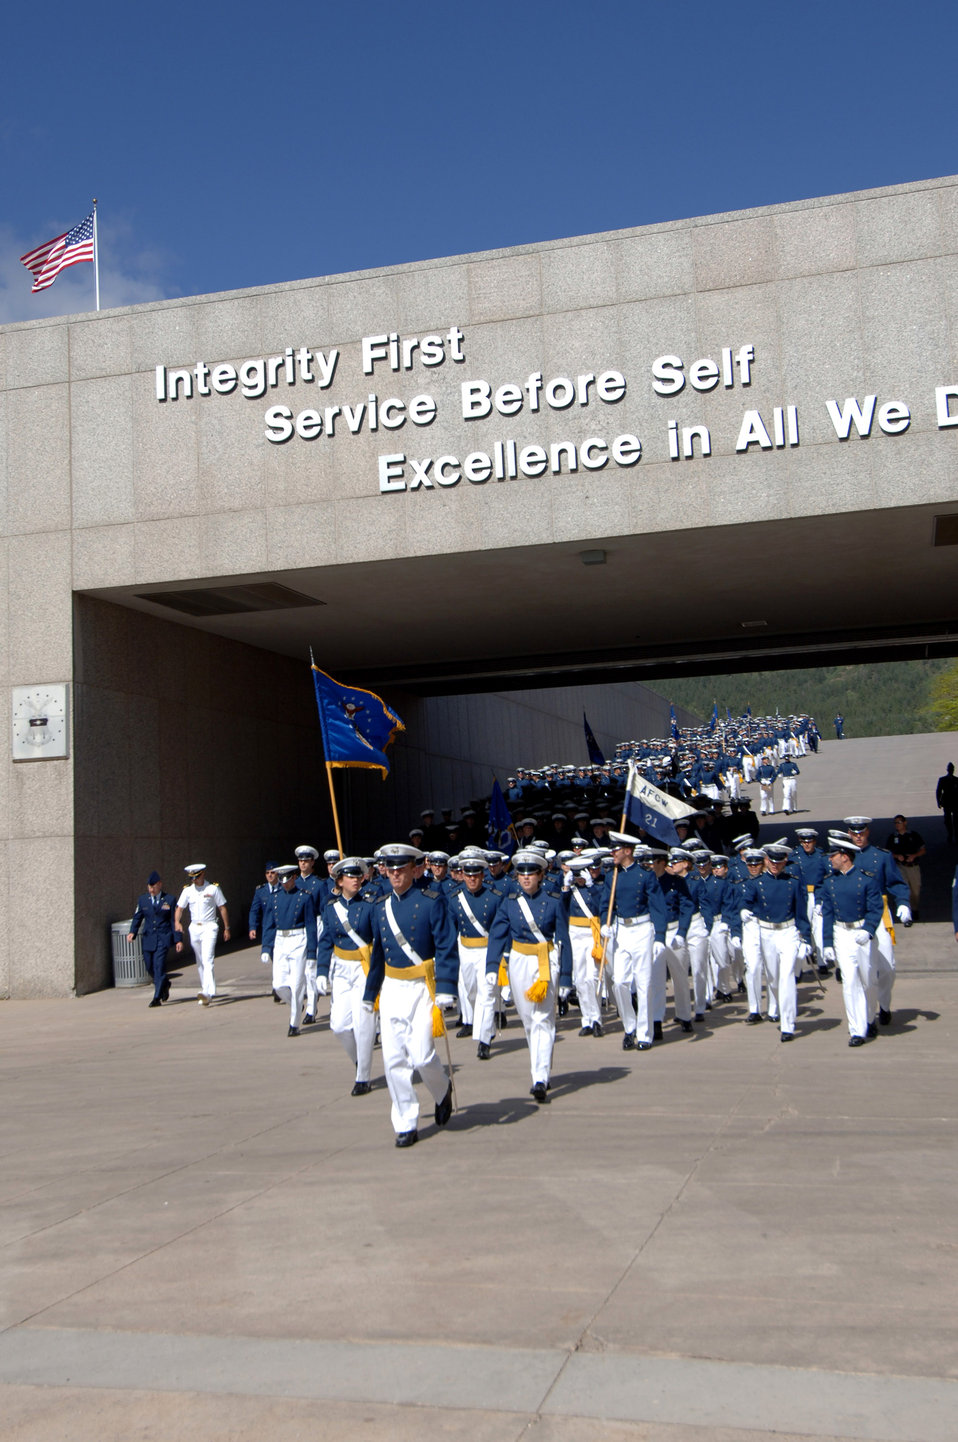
Parade preps Class of 2007 for graduation

Cadets march onto the parade field during the 2007 Graduation Parade May 29 at the U.S. Air Force Academy in Colorado. The graduation for the U.S. Air Force Academy's Class of 2007 will be held at 10 a.m. May 30 at Falcon Stadium. Secretary of Defense Dr. Robert M. Gates will be the guest speaker. The United States Air Force Academy offers a four-year program of instruction and experience designed to provide cadets the knowledge and character essential for leadership, and the motivation to serve as Air Force career officers.